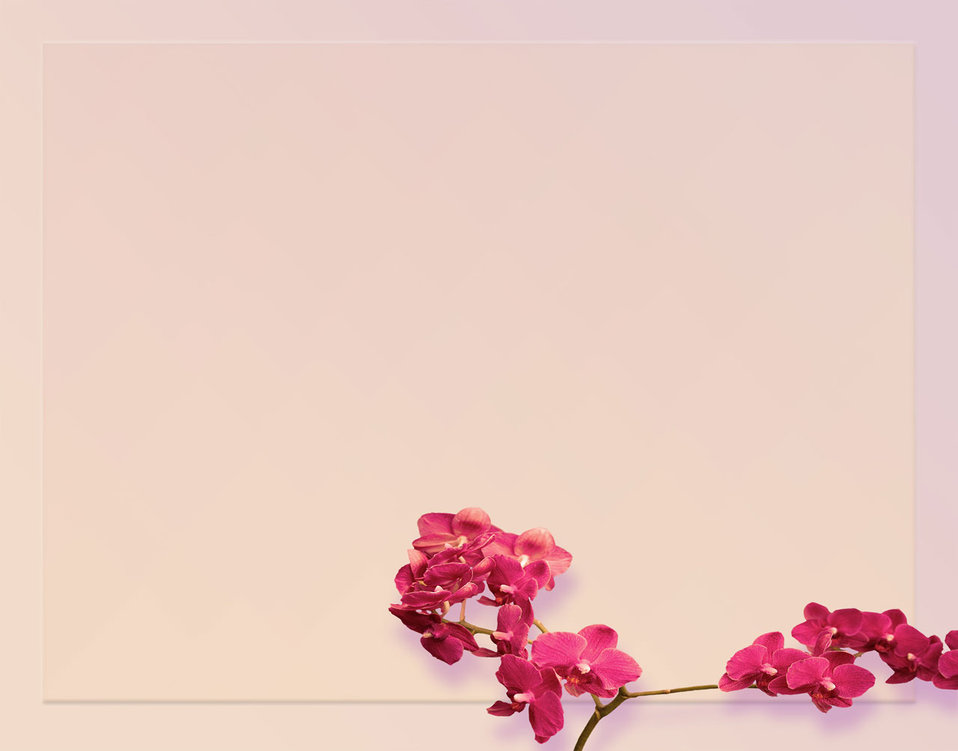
Red orchid background

Background template with red orchid.